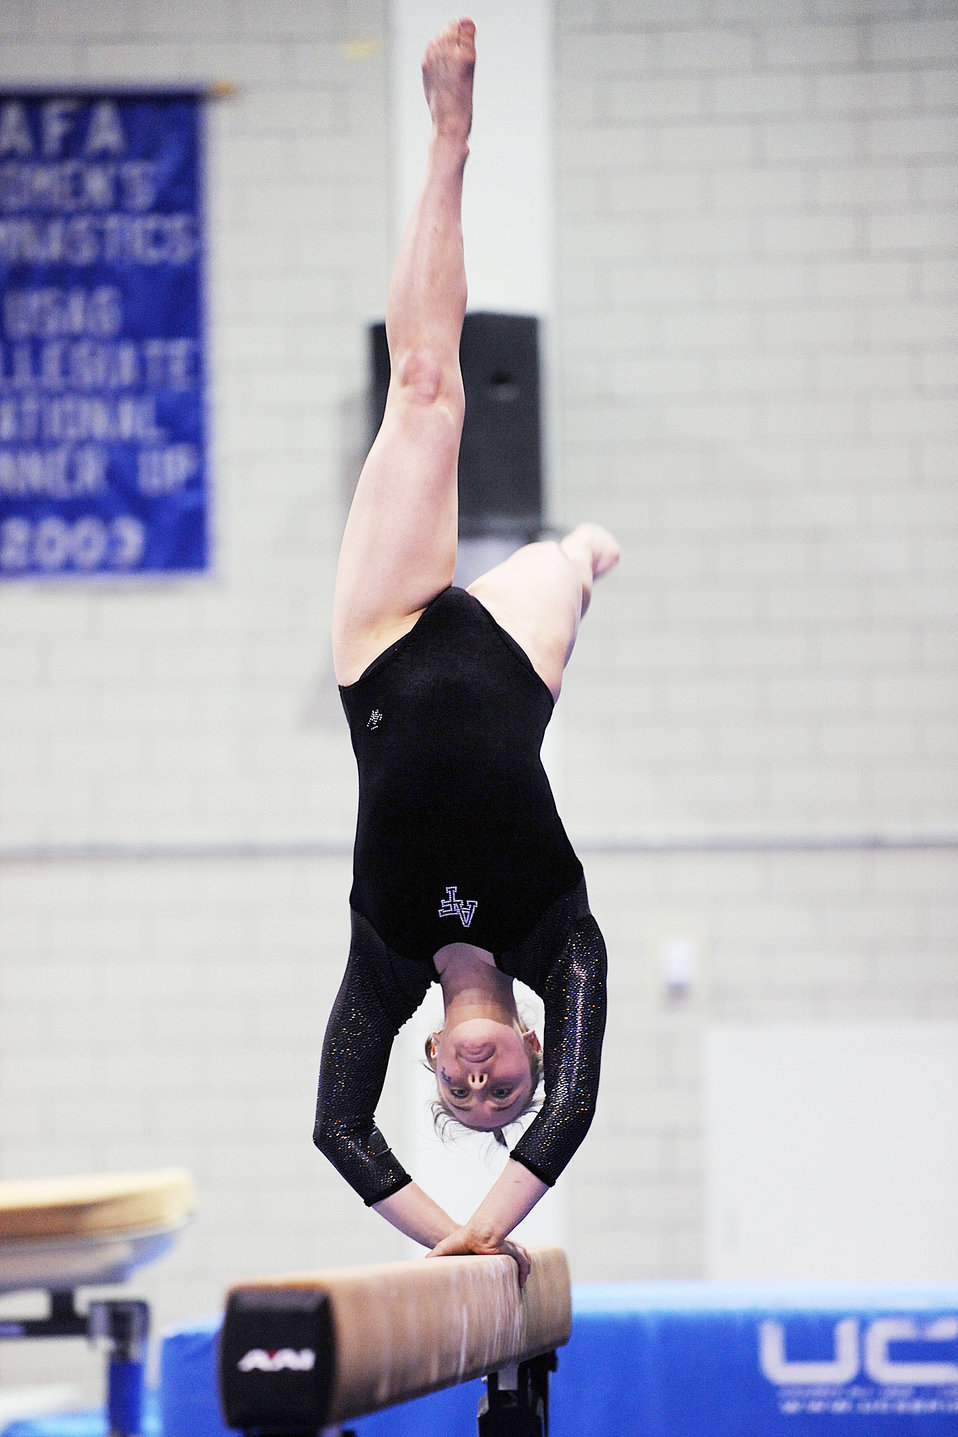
A gymnast on a balance beam

U.S. Air Force Academy freshman Erin Brown competes on the balance beam during the second annual Blue-Silver Invitational at the Cadet West Gym Dec. 5, 2009.